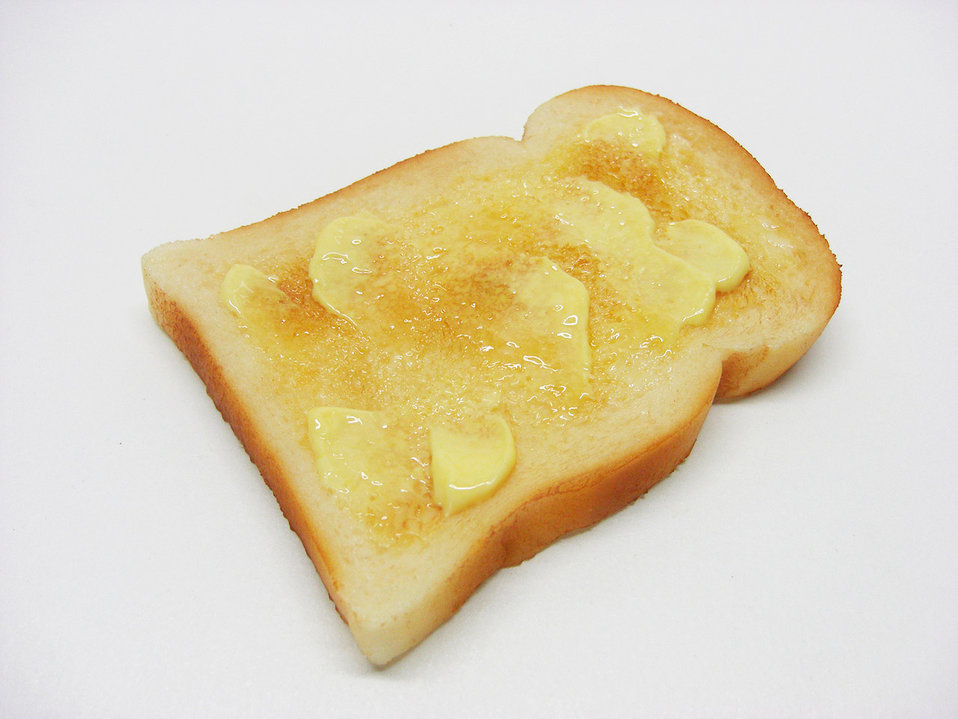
Buttered toast.